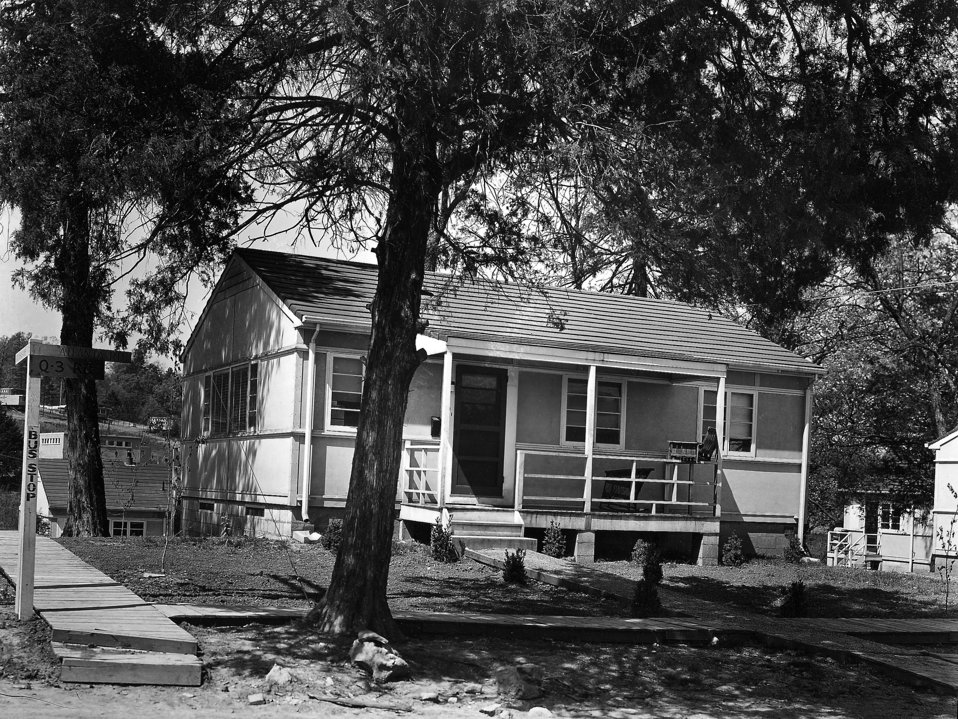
House Oak Ridge